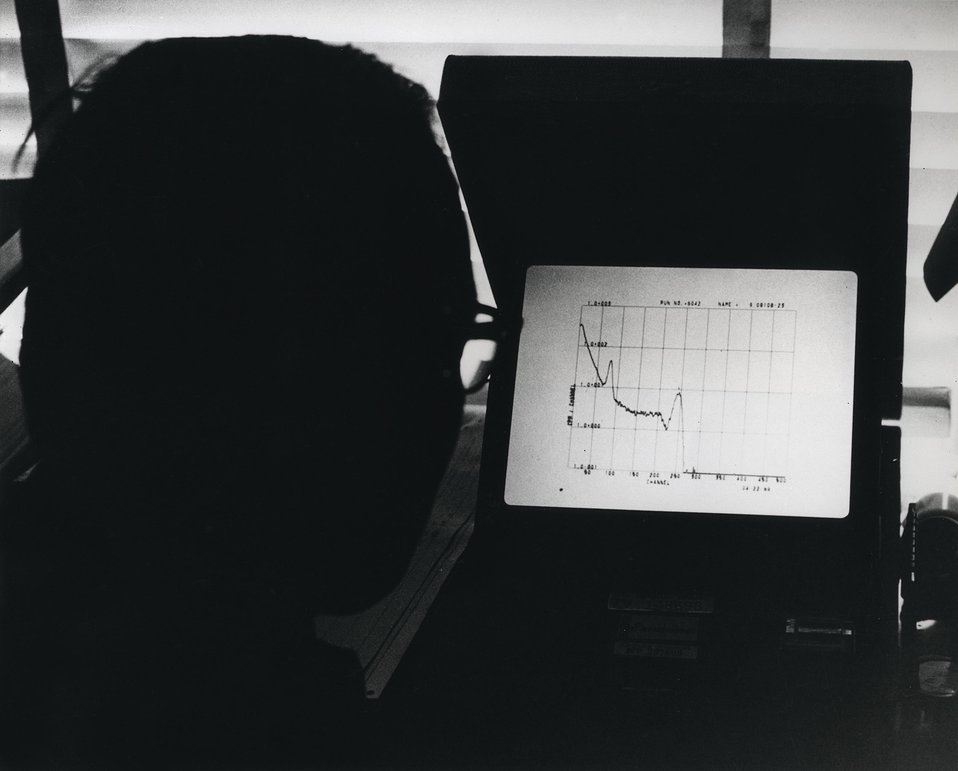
The data acquired through the use of neutron activation analysis is displayed as a 'gamma profile' such as this. Scientists can determine types and amounts of metallic elements to be found in fish as the result of their living in the water where these pollutants are present.